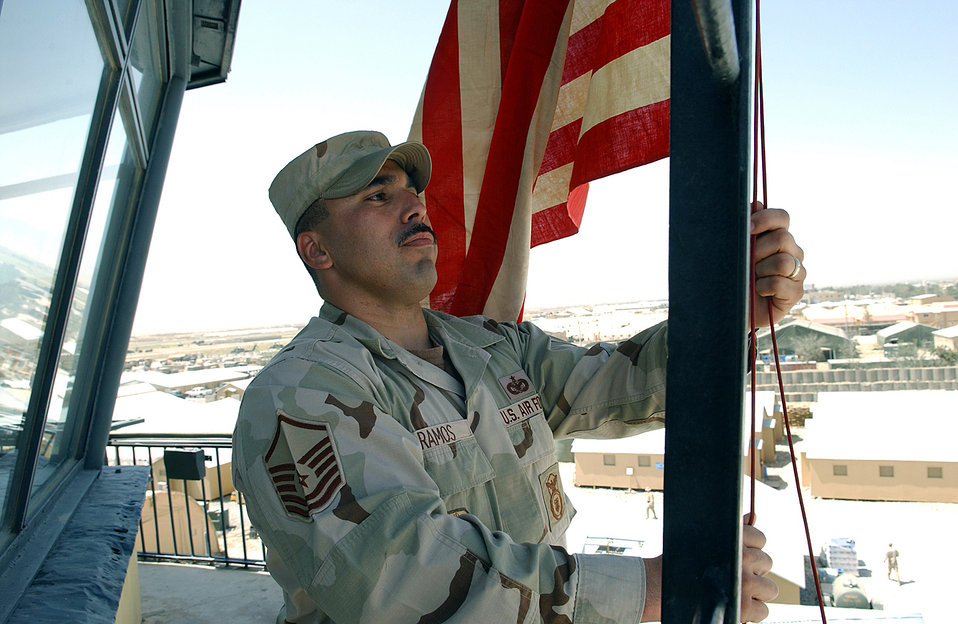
Well-traveled flag

BAGRAM AIR BASE, Afghanistan -- Master Sgt. Joe Ramos raises his flag over the air traffic control tower on Camp Cunningham here. The flag flew in tribute to former President Ronald Reagan, Sergeant Ramos' first commander-in-chief. Sergeant Ramos has carried this flag everywhere since he was 12. He is the operations superintendent for the 455th Expeditionary Security Forces Squadron and is deployed from McChord Air Force Base, Wash.